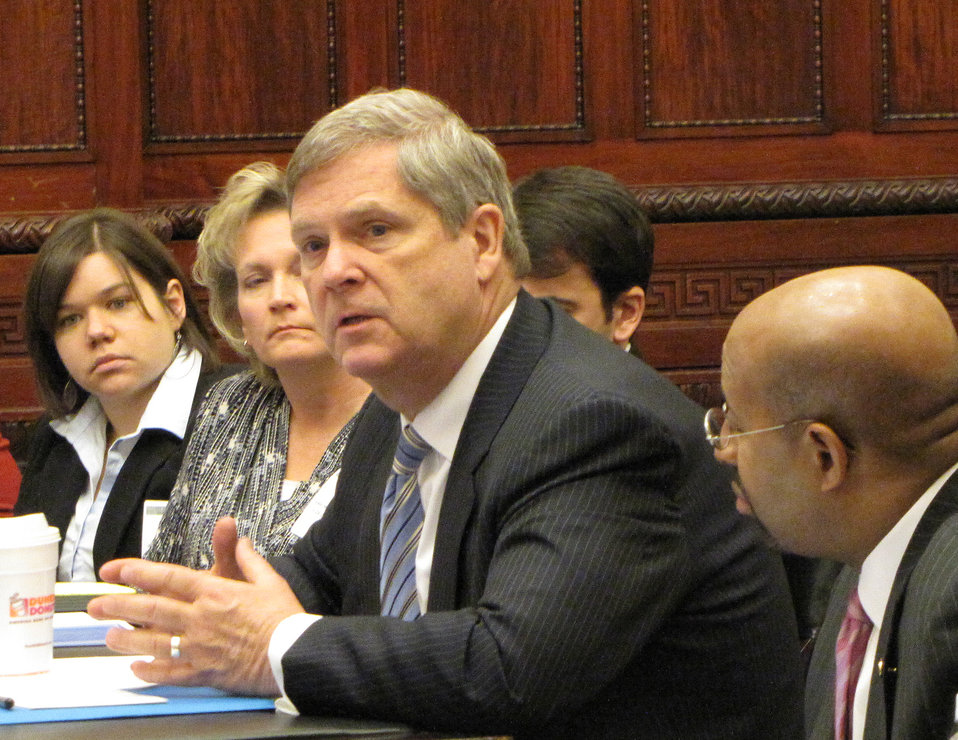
Agriculture Secretary Tom Vilsack held a roundtable meeting on Thursday, Jan. 26, 2012, with local business owners, agricultural leaders and state officials to discuss the vision laid out in President Obama's State of the Union address that will help grow the Pennsylvania economy. This meeting provided Secretary Vilsack with an opportunity to hear directly from Pennsylvanians on how to best implement the President's blueprint for an economy built to last.